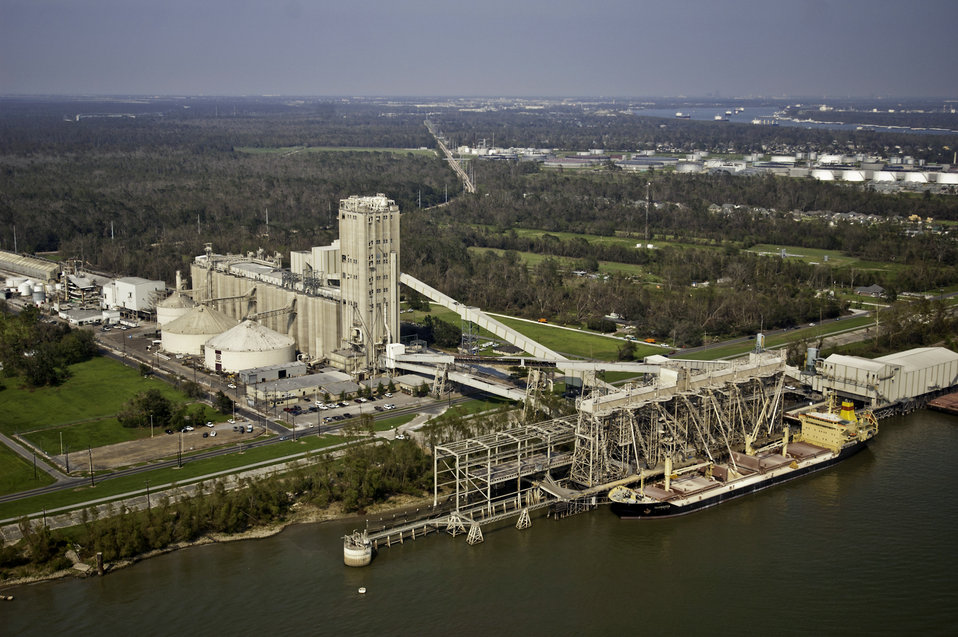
A grain storage facility fills a barge with grain for transportation on the Mississippi River in the Port of New Orleans, New Orleans, LA on Sept. 9, 2005.